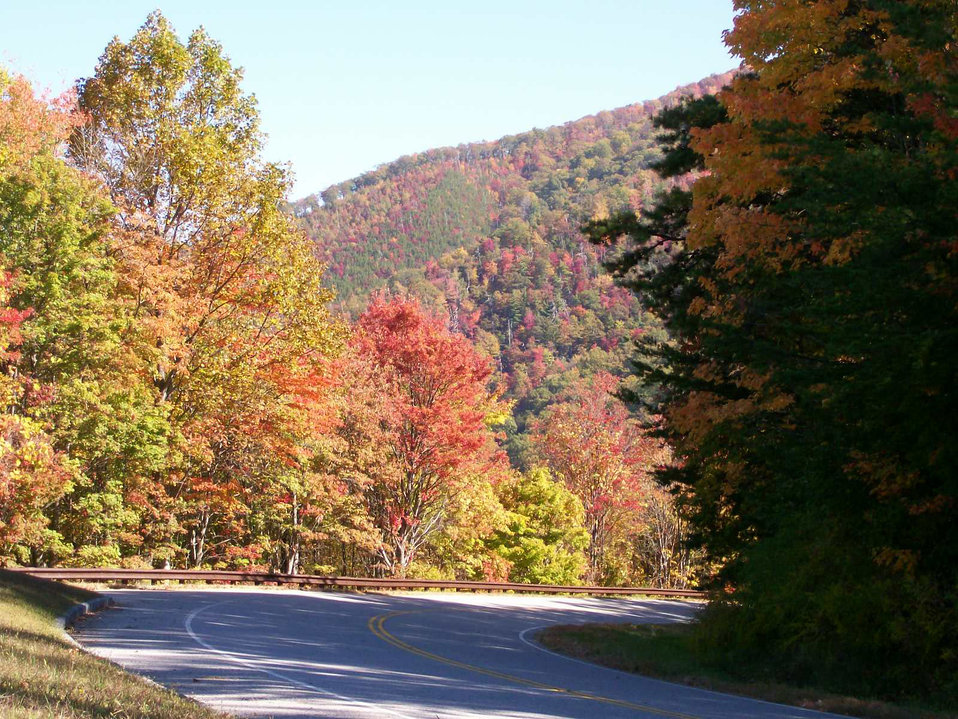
Fall foliage along Forest Road 77 in the Chilhowee Nationa Forest in Price, UT. The U.S. Forest Service (FS) has a Forest Service 2012 Fall Colors Website and a toll-free Fall Colors Hotline at 1-800-354-4595 that will help visitors plan their trip to catch the colors at their peaks.